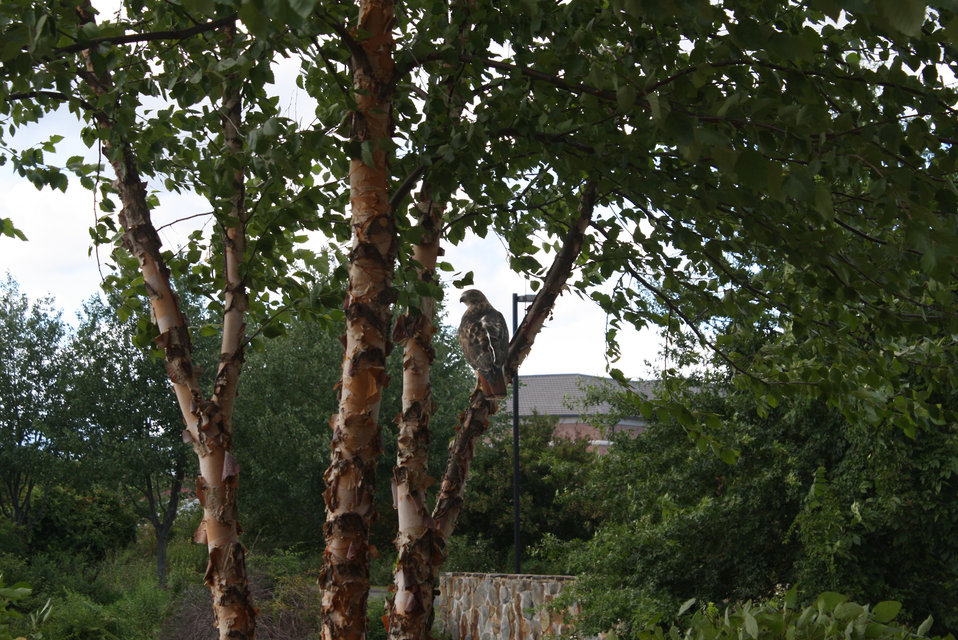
Red-tailed Hawk in tree

Hawk outside of the U.S. Fish and Wildlife Service Northeast Regional Office, August 14 2013 looking noble